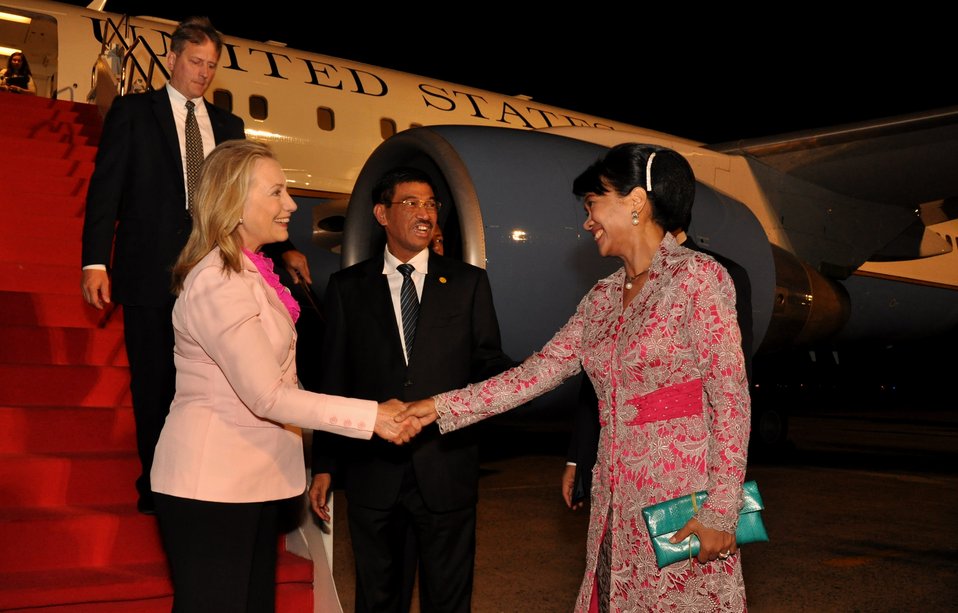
Secretary Clinton Greeted Upon Arrival to Indonesia

U.S. Secretary of State Hillary Rodham Clinton is greeted upon her arrival to Jakarta, Indonesia, September 3, 2012.